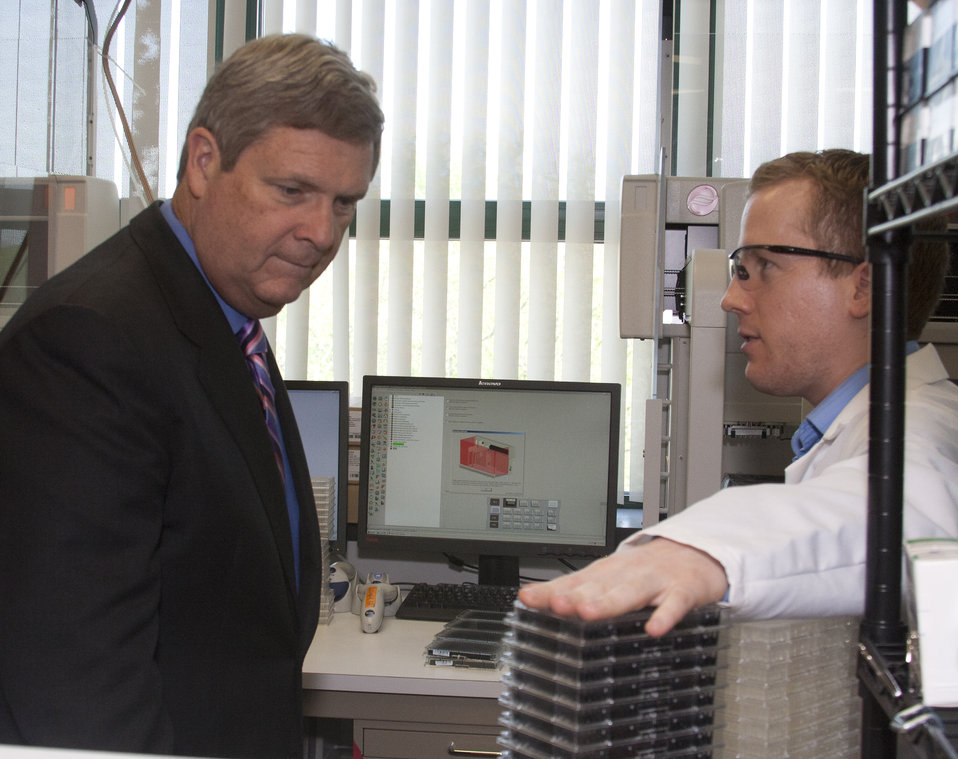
Agriculture Secretary Tom Vilsack visited Agrivida Inc., in Medford, MA, on Friday, May13, 2011. Agivida Inc. is a local company involved in developing new technologies to produce the next generation of biofuels, which will support economic development in rural America. Agrivida Inc. is developing methods to reduce the cost of converting biofuel feedstocks into sugar, focusing on sorghum, corn stover, and switchgrass. Agrivida biochemist Taran Shilling (right) shows Agriculture Secretary Tom Vilsack (left) the enzyme screening plates that Agrivida's automation processes to screen. Approximately 30,000 enzymes are processed per week to find ones that Agrivida believes will work particularly well in plants.